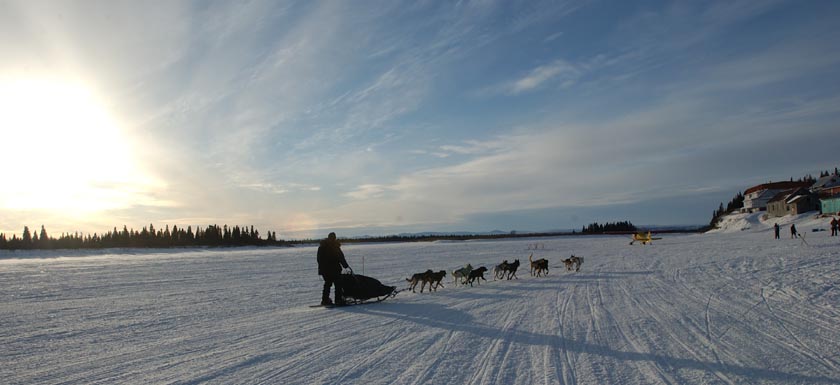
Elmendorf Airman finishes Iditarod

WHITE MOUNTAIN, Alaska -- Maj. (Dr.) Tom Knolmayer drives his dog team into a checkpoint here, 77 miles from the Iditarod finish line in Nome, Alaska. Dr. Knolmayer spent 13 days, 22 hours, 13 minutes and 25 seconds on the trail, covering 1,161 miles. He is chief of surgery at Elmendorf Air Force Base, Alaska.